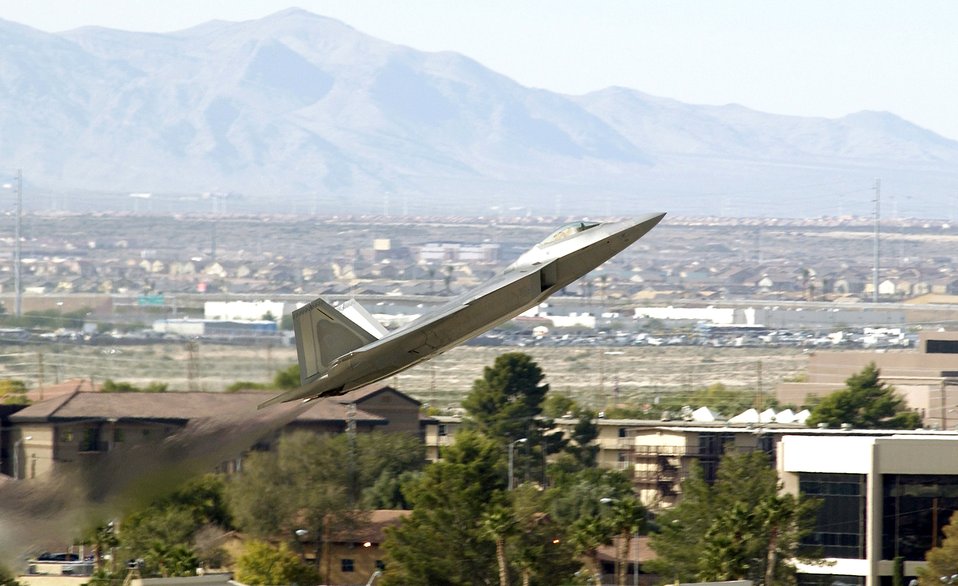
2005 air show Nellis AFB Nevada

NELLIS AIR FORCE BASE, Nev. (AFPN) -- An F/A-22 Raptor aircraft takes off for a demonstration flight during the Aviation Nation 2005 air show. This year's event, held Nov. 12 and 13, was dedicated to Vietnam War veterans with a special welcome home tribute. It drew more than 150,000 spectators.